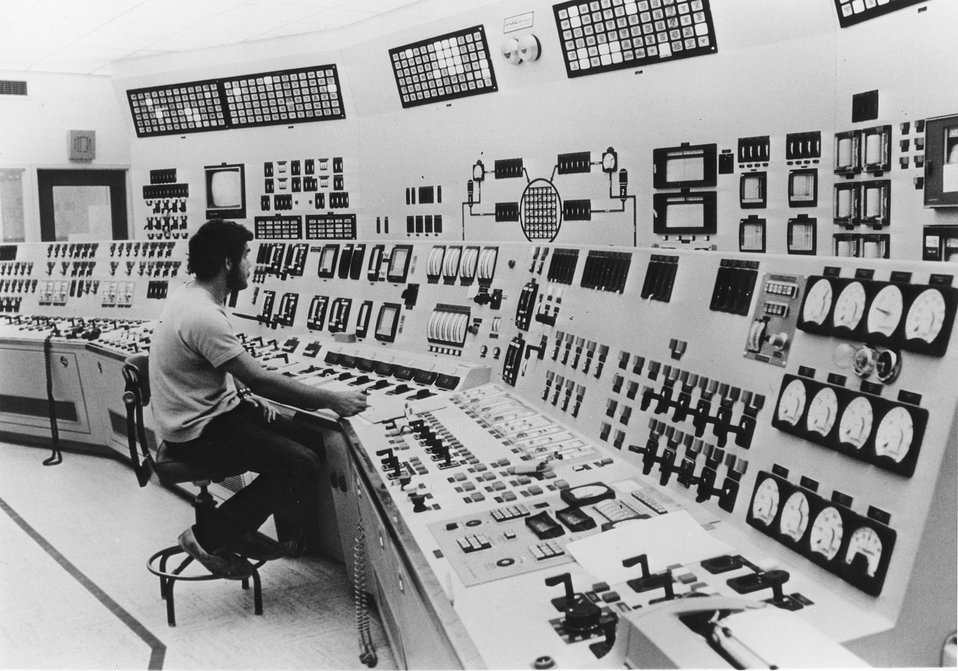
Control room at the Consumer Power Company of Michigan's Palisades Plant Unit 1. Circa 1974.